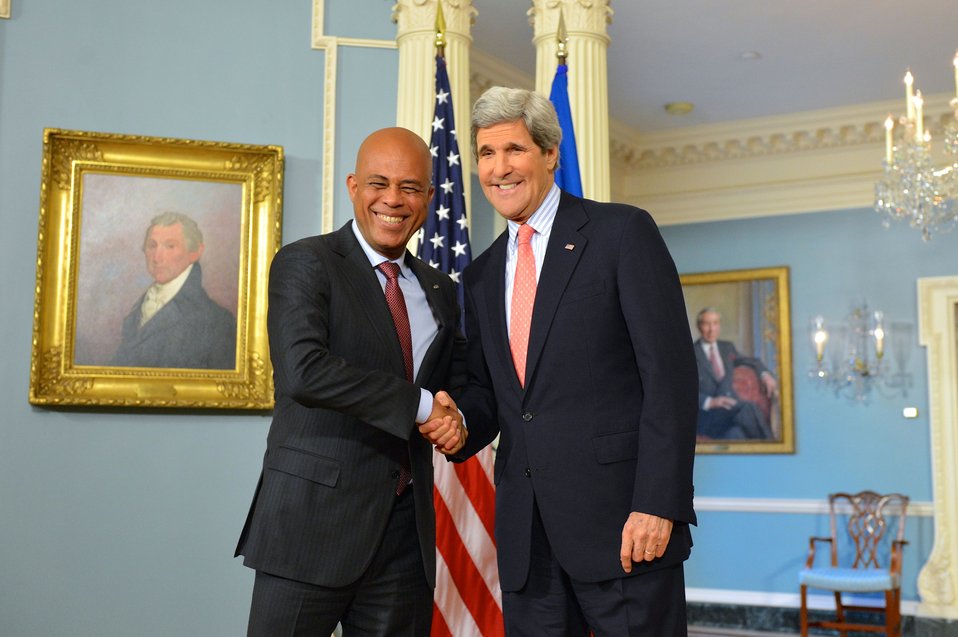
Secretary Kerry Shakes Hands With Haitian President Martelly

U.S. Secretary of State John Kerry and Haitian President Michel Martelly shake hands after addressing reporters at the U.S. Department of State in Washington, D.C., on February 5, 2014.